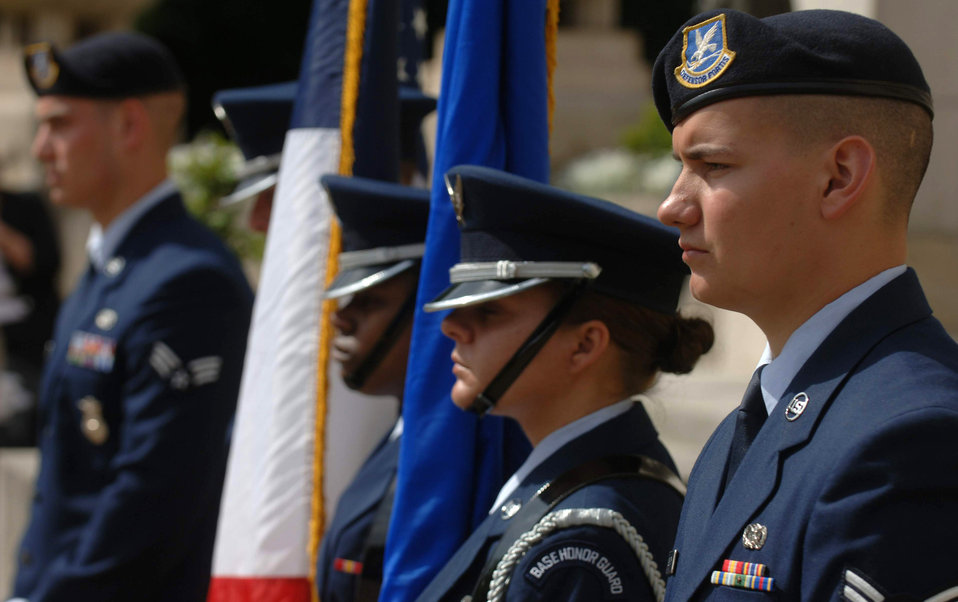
America's first combat aviators memorialized

Airman 1st Class Travis Beatty, Senior Airman Jackie Van Wagner, and Senior Airman Leschia Ross were joined by more than a dozen Ramstein honor guard members who helped officiate the annual Lafayette Escadrille Memorial ceremony outside of Paris May 23.